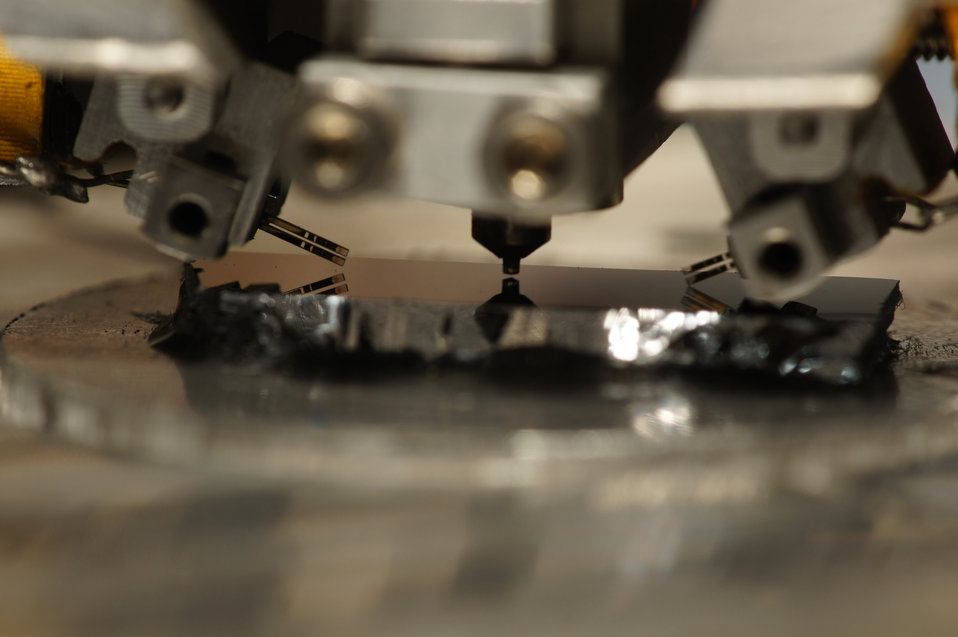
Nanoscale Indenter

Good vibrations: Close-up image shows the tip of the new NIST nanoscale indenter flanked by two tuning forks that provide a stable, noncontact reference relative to the specimen, a piece of single-crystal silicon. Using a piar of tuning forks allows the system to compensate for any tilt.